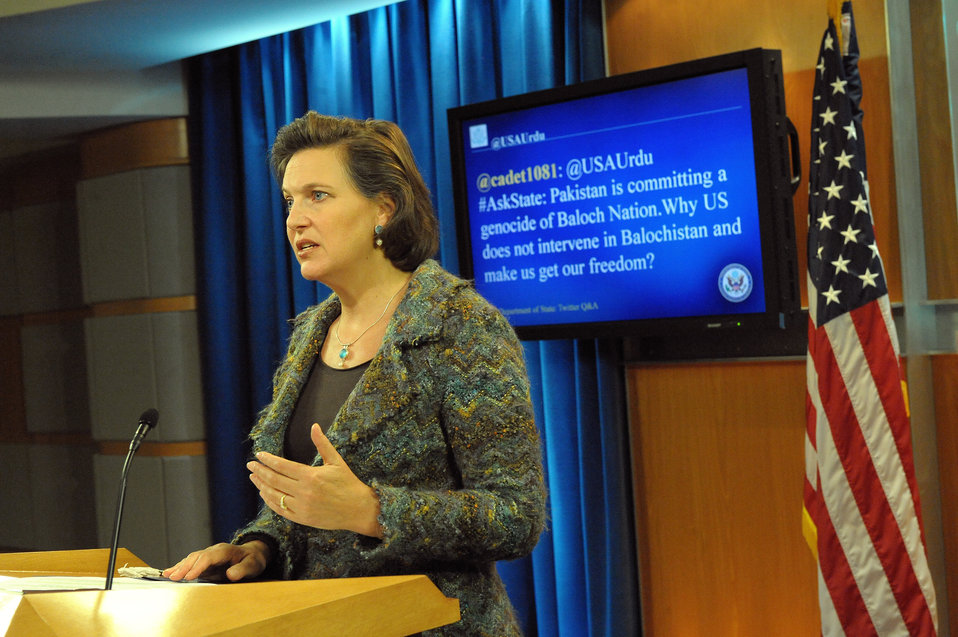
Spokesperson Nuland Responds to a Question from @USAUrdu

Victoria Nuland, Spokesperson for the U.S. Department of State, answers a question selected from the Department’s official Urdu Twitter feed, @USAUrdu, on January 13, 2012.